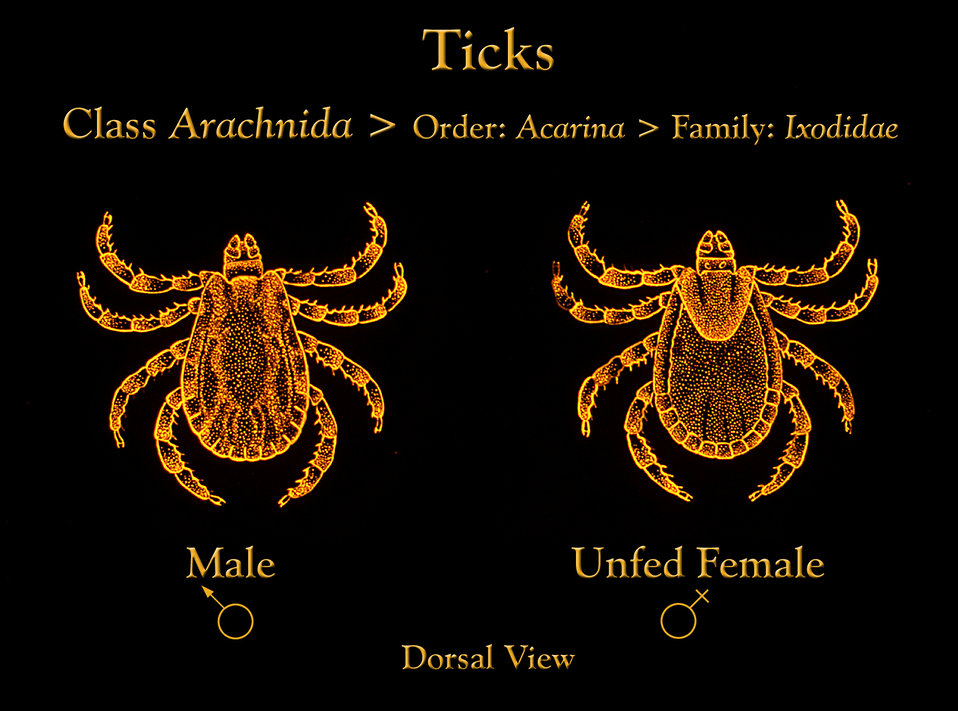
This drawing depicts a male and female Ixodidae hard tick from the dorsal perspective; the female is unfed.